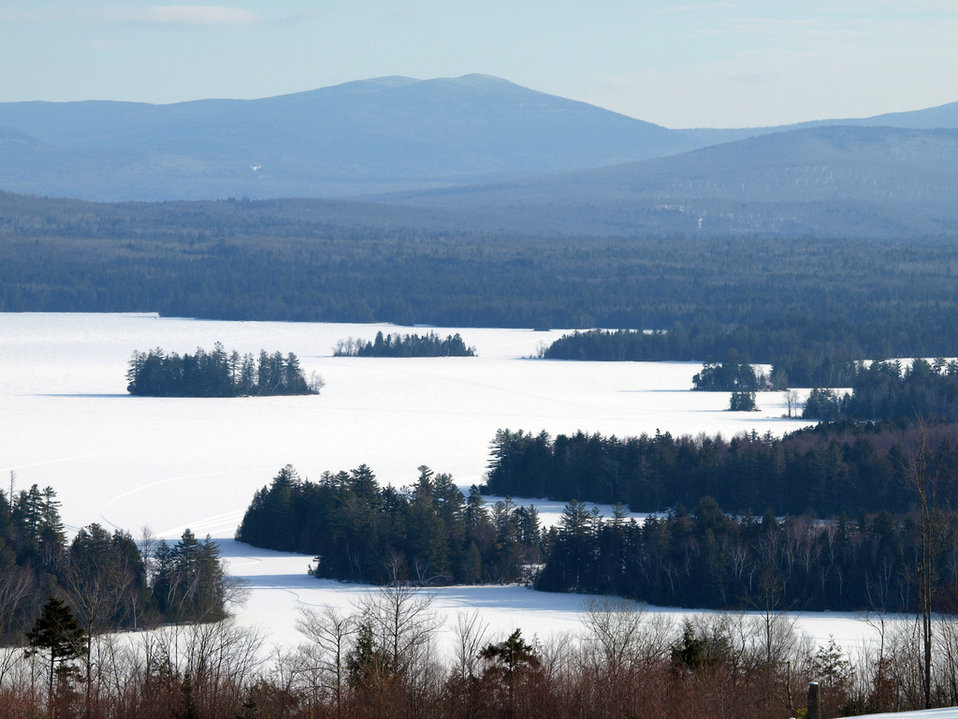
Photo of the Week - Frozen Lake Umbagog (NH)

Photo of the Week - 1/6/14

Frozen Umbagog Lake at Umbagog National Wildlife Refuge in New Hampshire. Recently, the Service worked with partners to exchange a 233-acre-parcel in the Town of Errol for a conservation easement on New Hampshire's Big Island State Forest in Wentworth's Location.